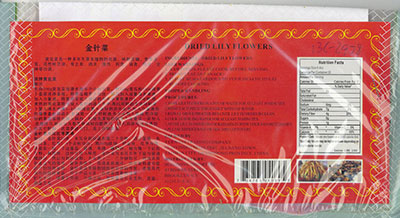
RECALLED - Farmer Brand Dried Lily

December 13, 2013 – Product Recall – Blooming Import Inc. Issues an Alert on Undeclared Sulfites in Farmer Brand Dried Lily Flowers.